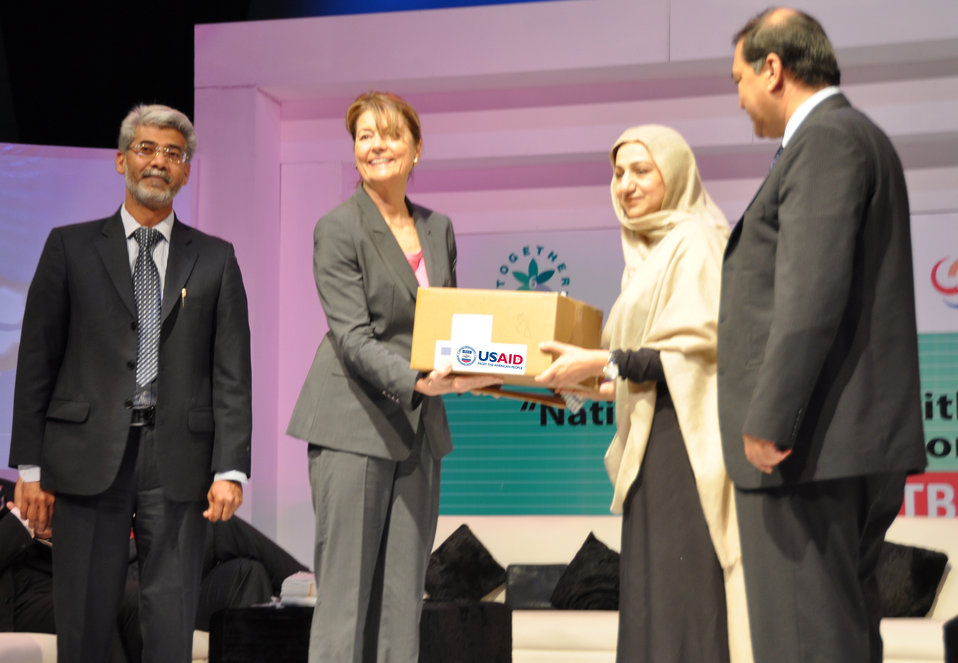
Estes TBDay2014

Nancy Estes, Acting Mission Director USAID, hands over some of the goods provided for the fight against tuberculosis to Minister of State, National Health Services, Mrs. Saira Afzal Tarar.